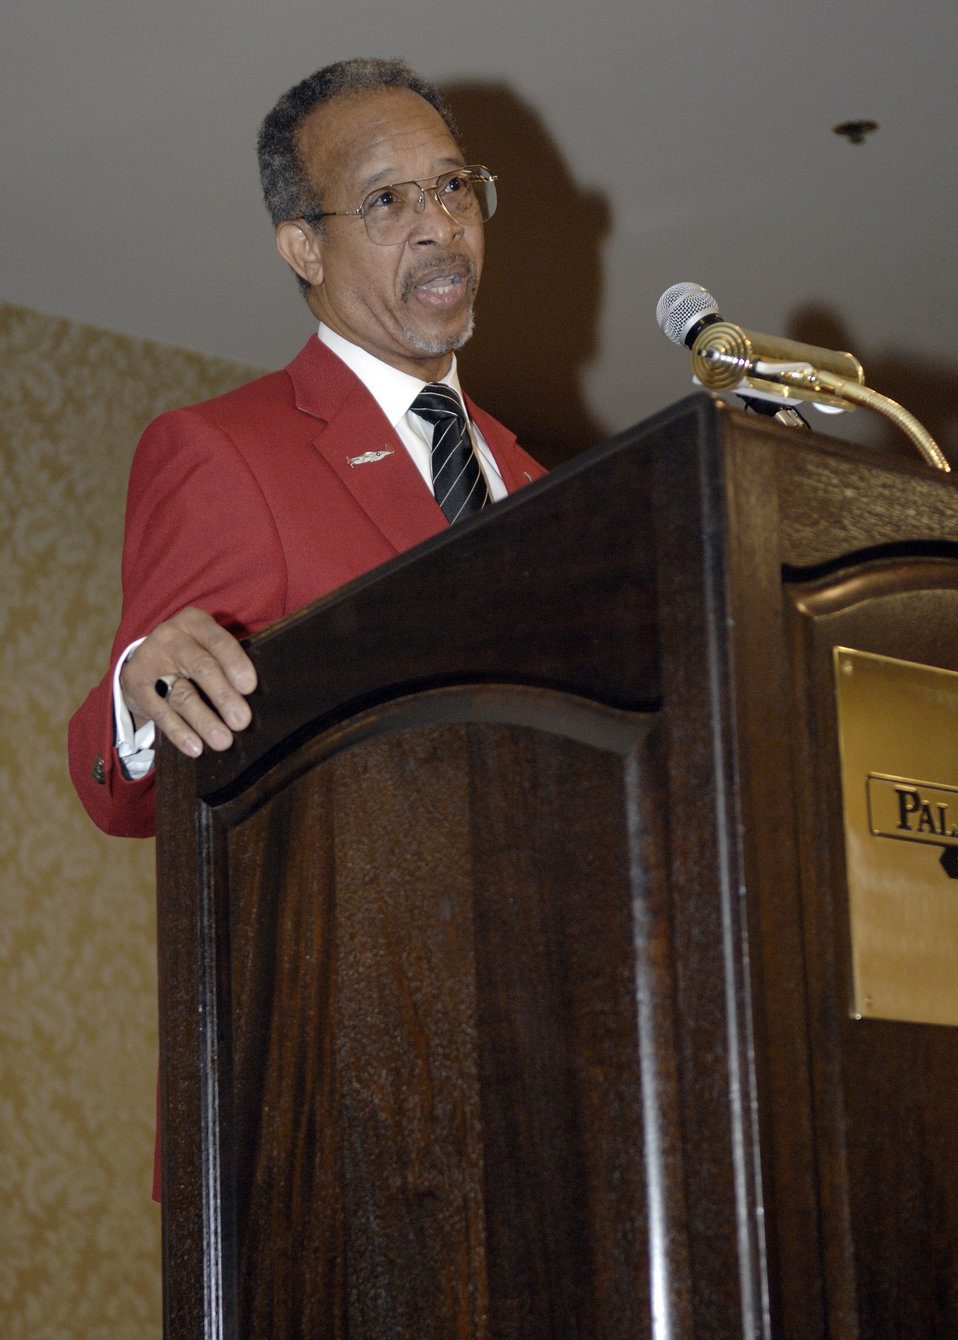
Lonely Eagles ceremony recognizes fallen Tuskegee Airmen

Retired Lt. Gen. Russell C. Davis addresses military members and civilians during the Lonely Eagles Ceremony at the 38th Annual Tuskegee Airman, Inc., convention Aug. 7 in Las Vegas. General Davis, the Tuskegee Airman, Inc., national president, discussed the legacy of all Tuskegee Airmen and memorialized the black aviators who died since the 2008 convention. TAI is a nonprofit organization dedicated to honoring the accomplishments of the African-American air, ground and operations crewmembers in the Army Air Corps during World War II.